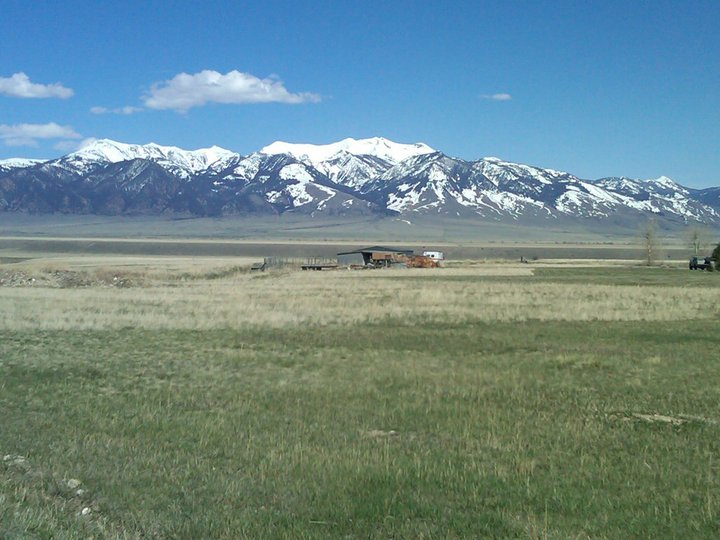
Scenic View in Montana

What a beautiful setting in which to work! A scenic shot on the way to Ennis National Fish Hatchery.